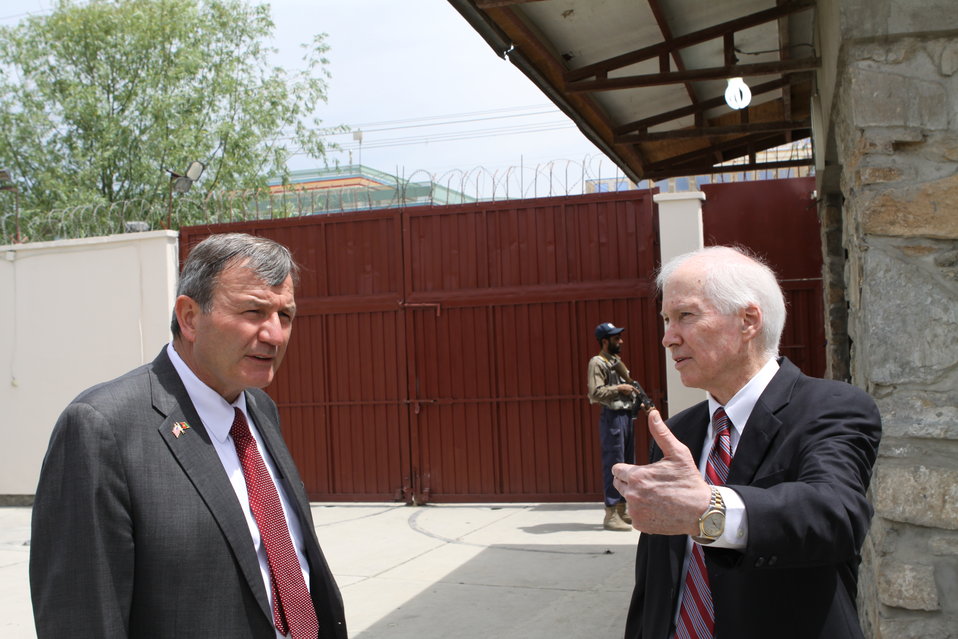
100526 AUAF Graduation 018